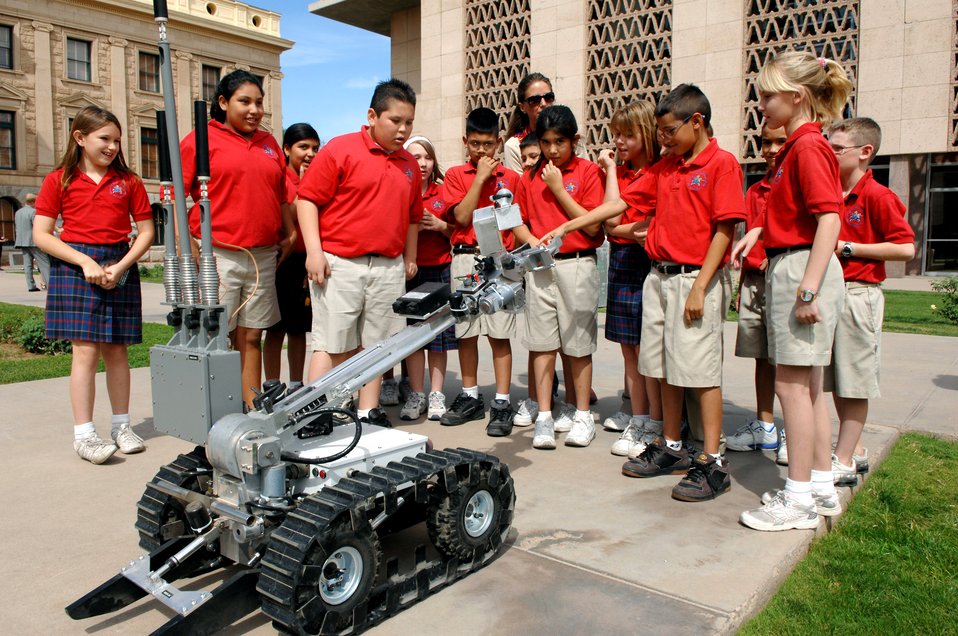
Check out our robot

Students from a local school check out one of the Air Force explosive ordnance disposal robots during a field trip to the Arizona Science Center in downtown Phoenix. EOD specialists from nearby Luke Air Force Base brought the robot to help kick off Air Force Week in Phoenix.